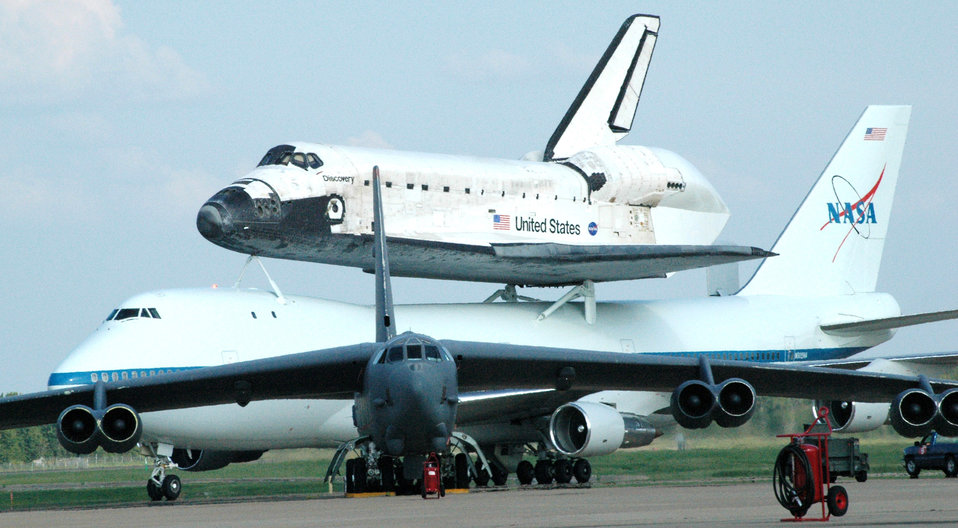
Shuttle stop

BARKSDALE AIR FORCE BASE, La. -- A NASA Boeing 747 carrying Space Shuttle Discovery, still scorched from its re-entry into Earth's atmosphere, taxis here Aug. 19. Discovery's stop was the second of two as the shuttle was on its way back to Kennedy Space Center, Fla.